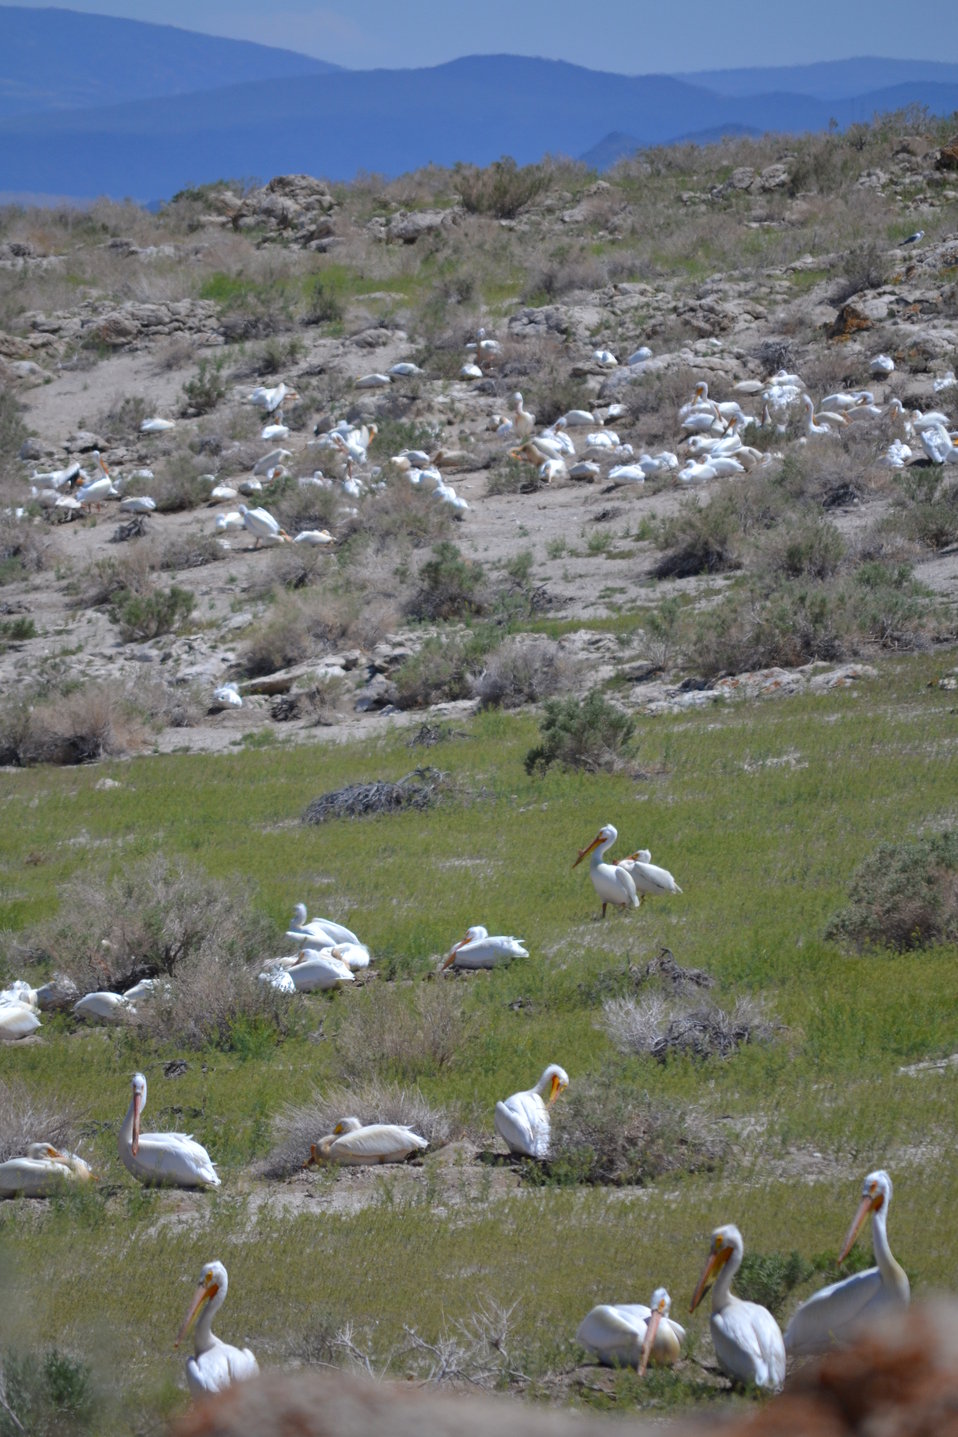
Nesting American white pelicans at Anaho Island NWR

The island supports one of the largest breeding colonies of American white pelicans in the western United States. In recent years, between 8,000 and 10,000 pelicans have returned to Anaho Island during the spring from their wintering areas in Southern California and Baja, Mexico.